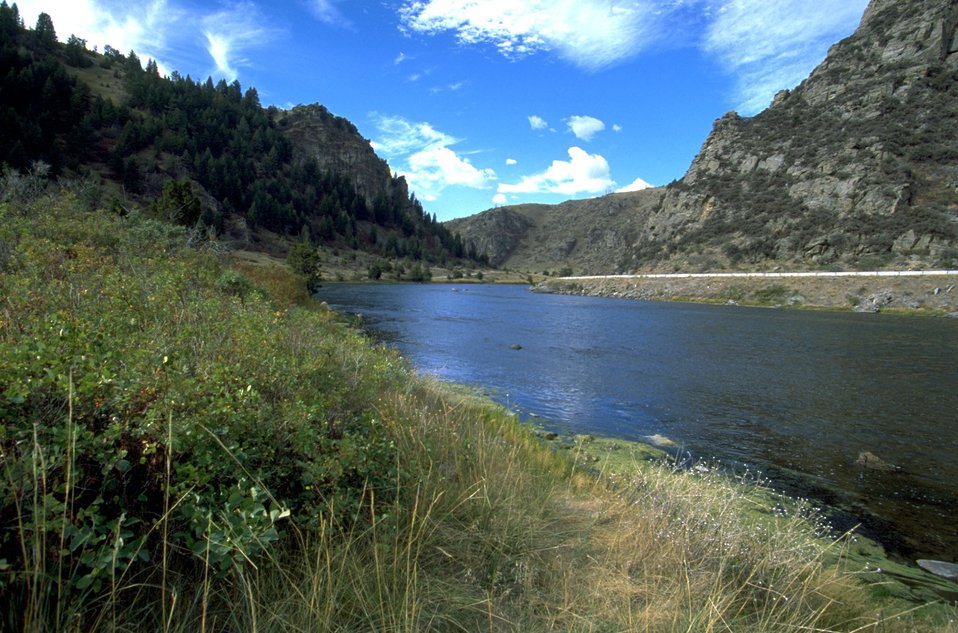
The Madison River